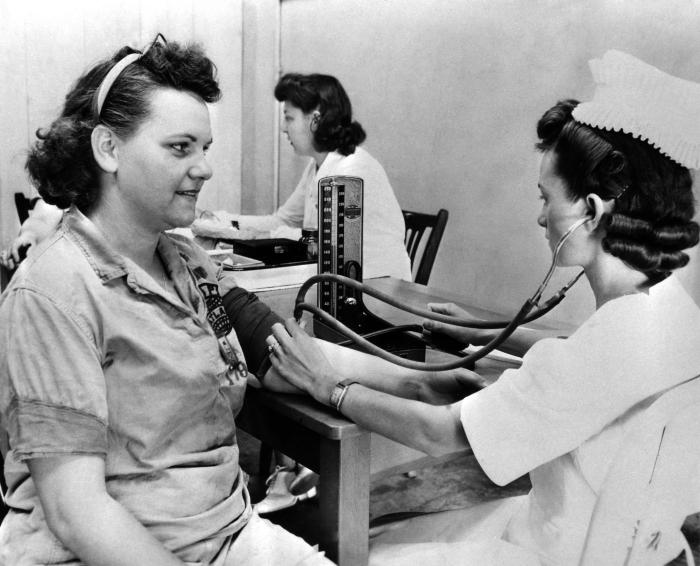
This historical 1943 image, which was provided by the Center for Disease Control's (CDC), National Institute for Occupational Safety and Health (NIOSH), depicted two inhouse nurses examining fellow coworkers at an Ohio TNT (trinitrotoluene) military ordnance manufacturing facility, for symptoms of TNT poisoning. The nurse in the foreground was in the process of taking a blood pressure reading from one female employee using a sphygmomanometer, while the nurse in the background was performing a finger stick (See PHIL 9790), thereby, extracting a blood sample that would later be analyzed for the presence of metabolites indicative of TNT poisoning.